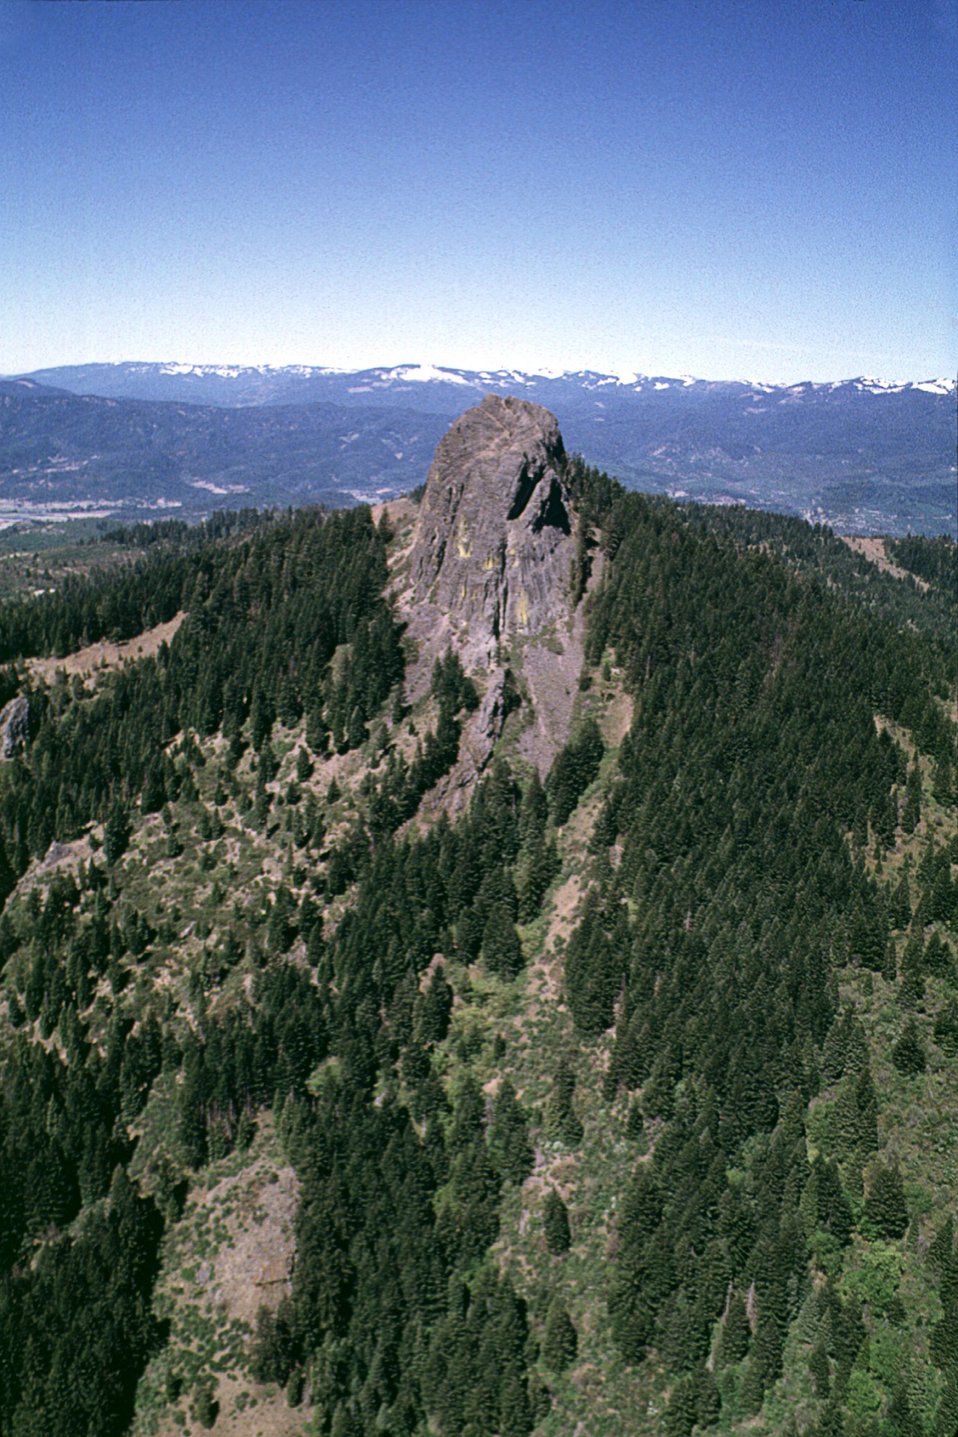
Pilot Rock showing the Cascade cut. Frank Lane 6-99